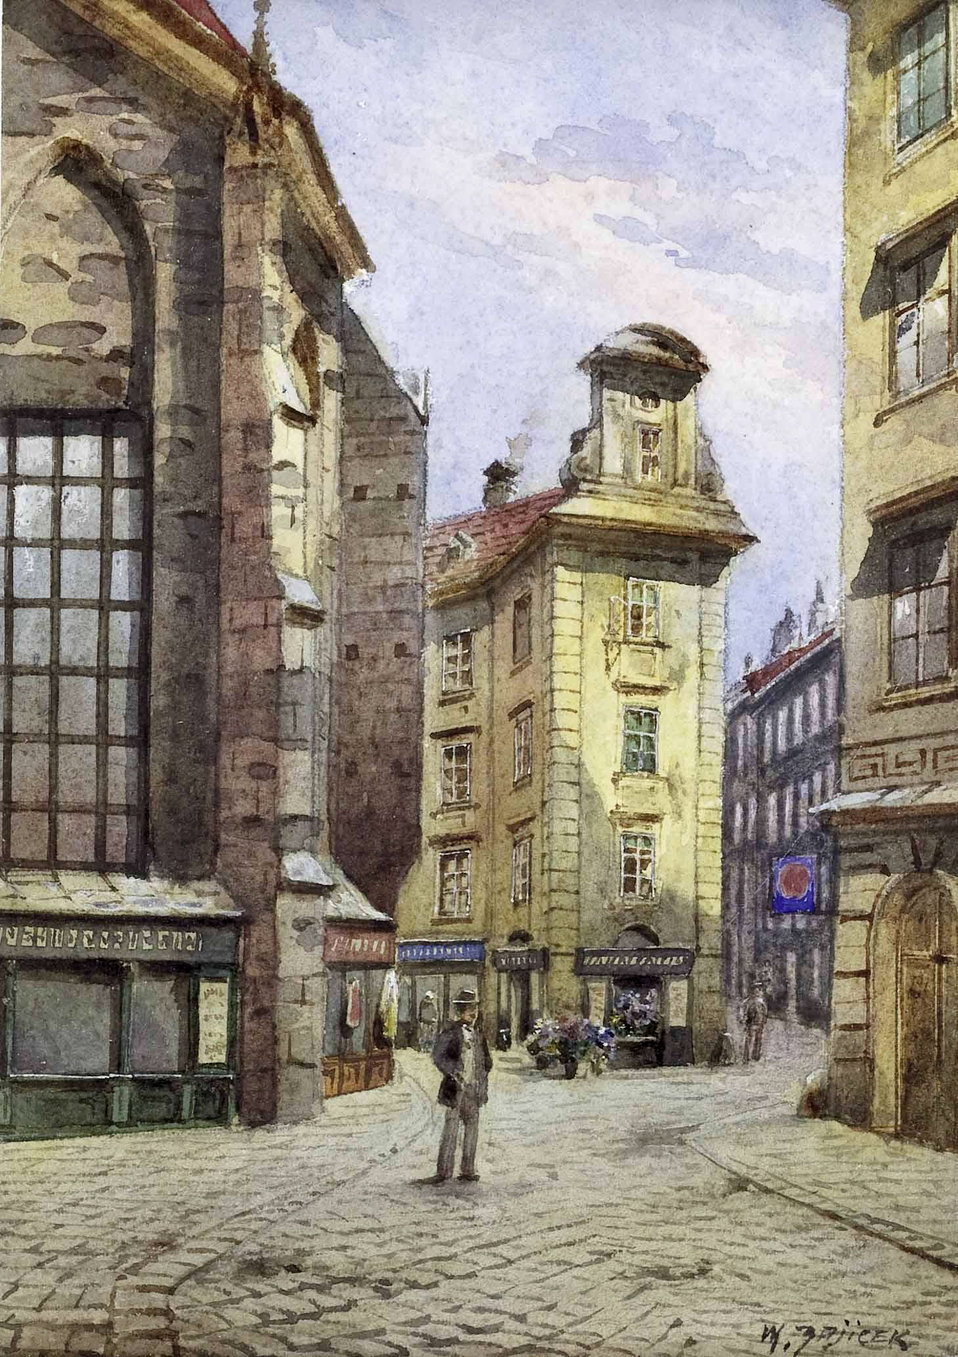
'Blick in die Kurrentgasse in Wien', links der Chor der Kirche am Hof, unten rechts signiert: W. Zajicek, Aquarell auf Papier, Bildausschnitt ca. 18 x 13 cm